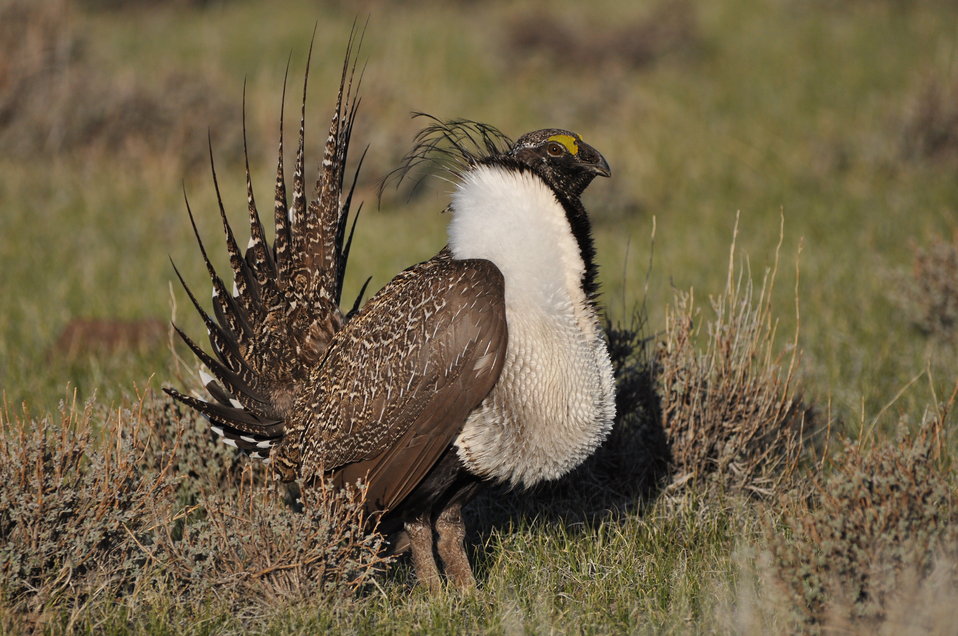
Greater Sage-Grouse

Photo Credit: Jeannie Stafford/USFWS
A greater sage-grouse male struts at a lek (dancing or mating ground) near Bridgeport, CA to attract a mate.